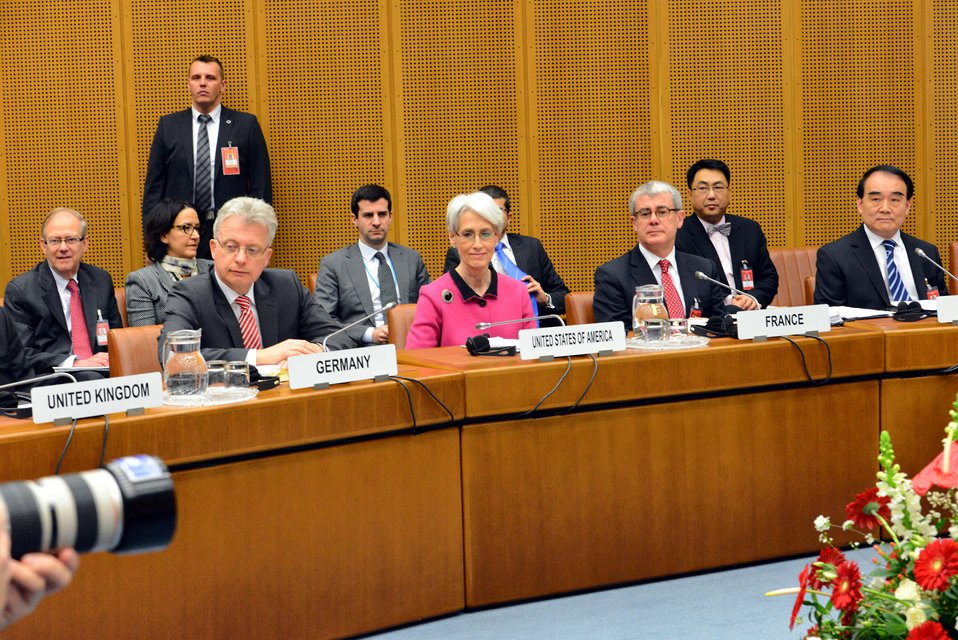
Under Secretary Sherman Leads the U.S. Delegation at Iran Talks in Vienna

Under Secretary of State for Political Affairs Wendy Sherman leads the U.S. delegation at the opening plenary session of the Iran talks in Vienna, Austria, on February 18, 2014.